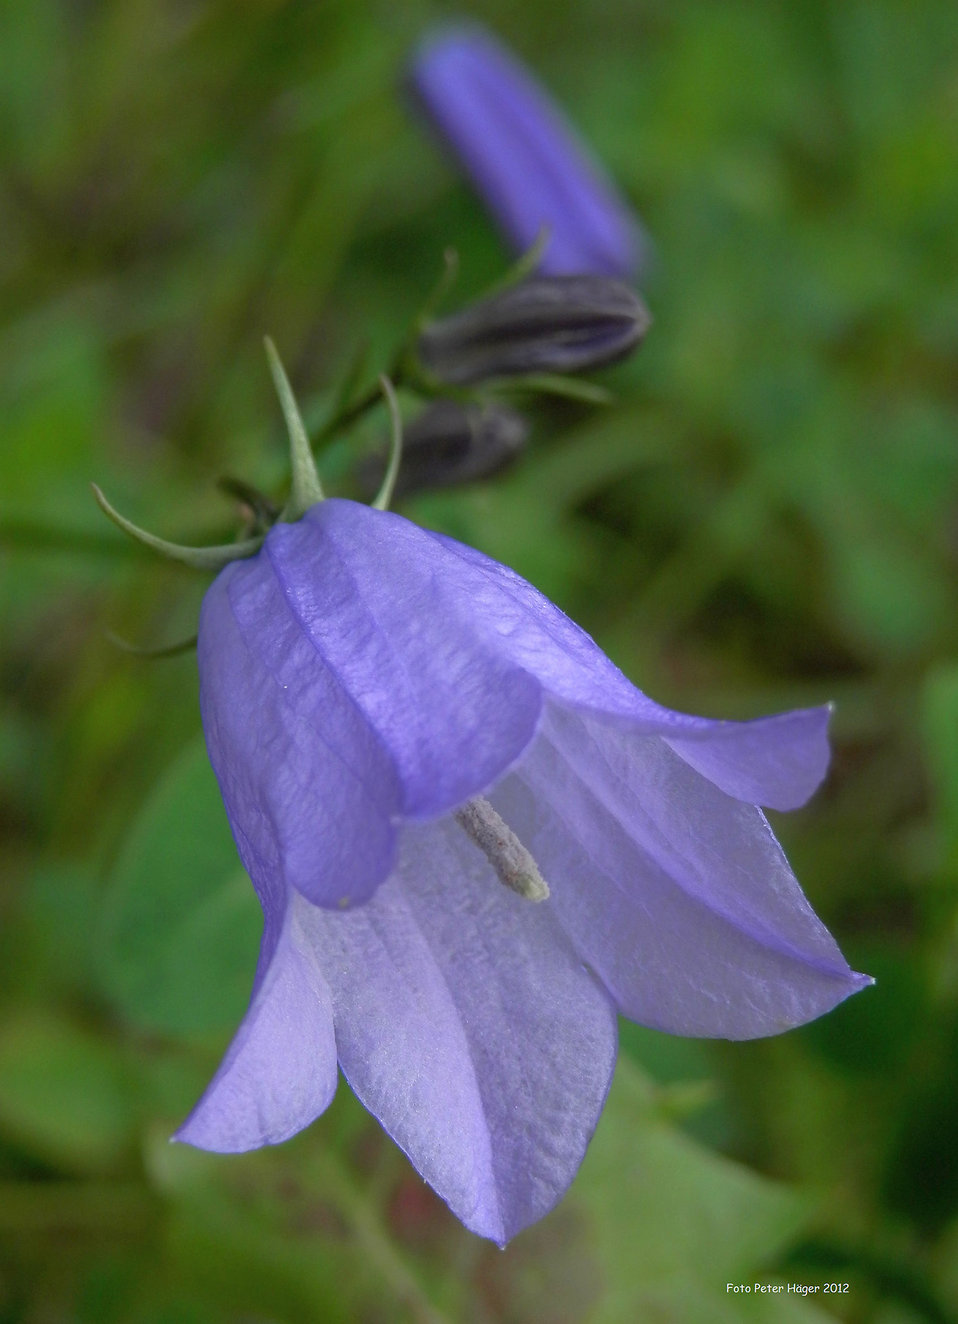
Bluebells

Campanula rotundifolia.